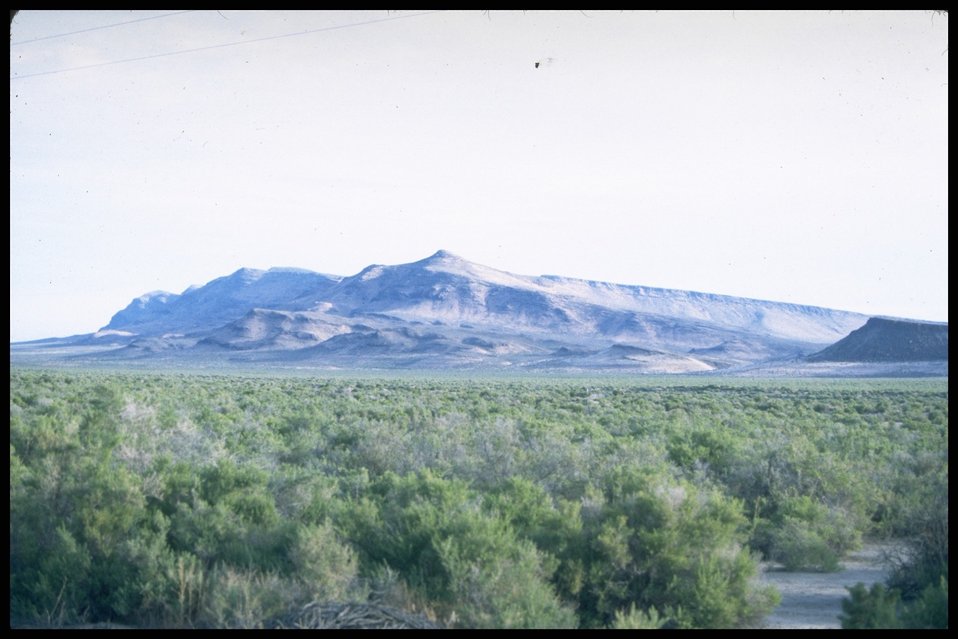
Scenic view of Coglen Buttes, Lakeview District.